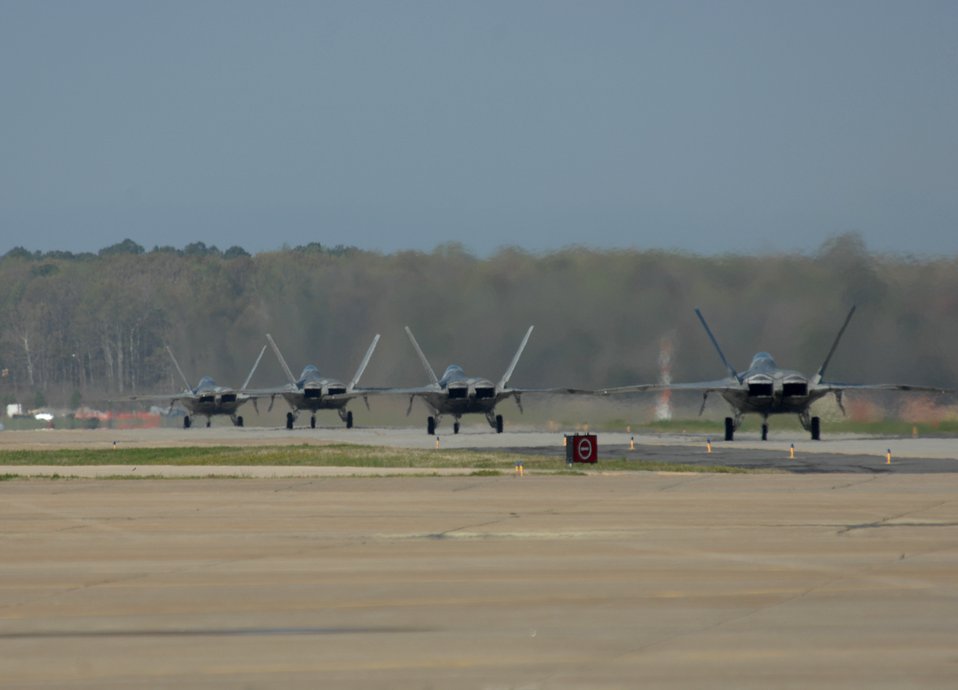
Operational readiness inspection

F-22 Raptors taxi April 10, 2011, during an operational readiness inspection at Langley Air Force Base, Va.